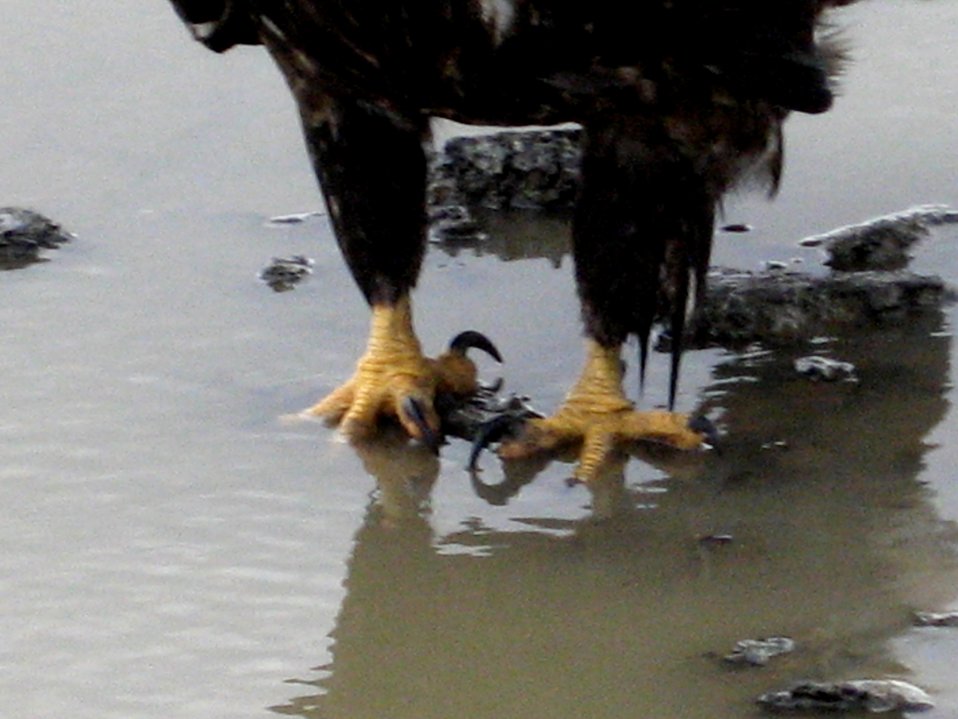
Large strong talons of eagle.